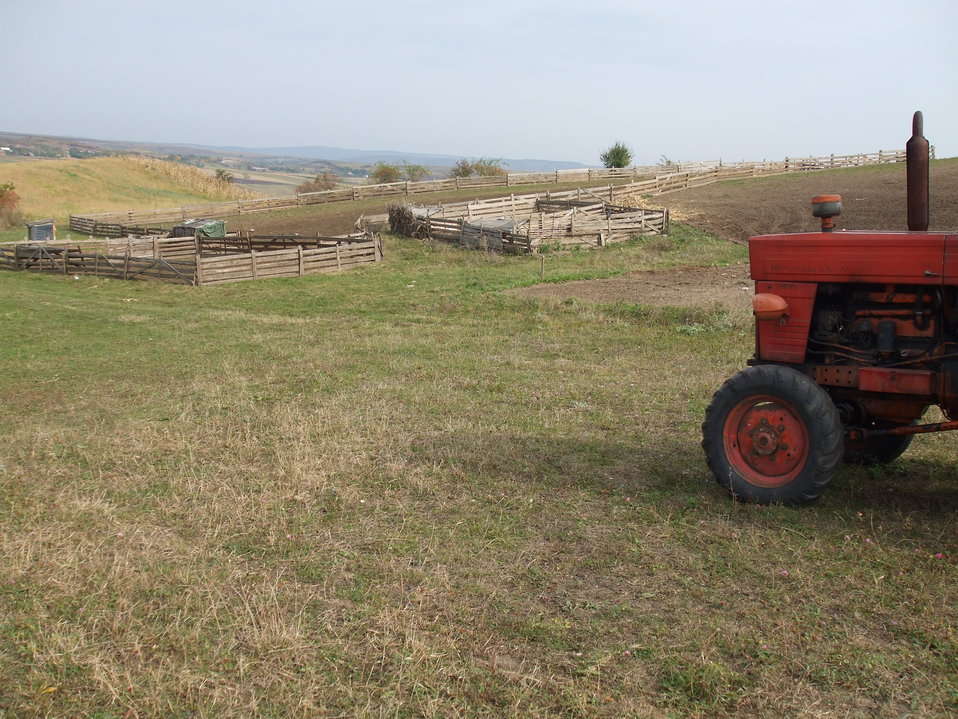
Română: Imagini-Damburile,Suatu (staul ciobanesc)